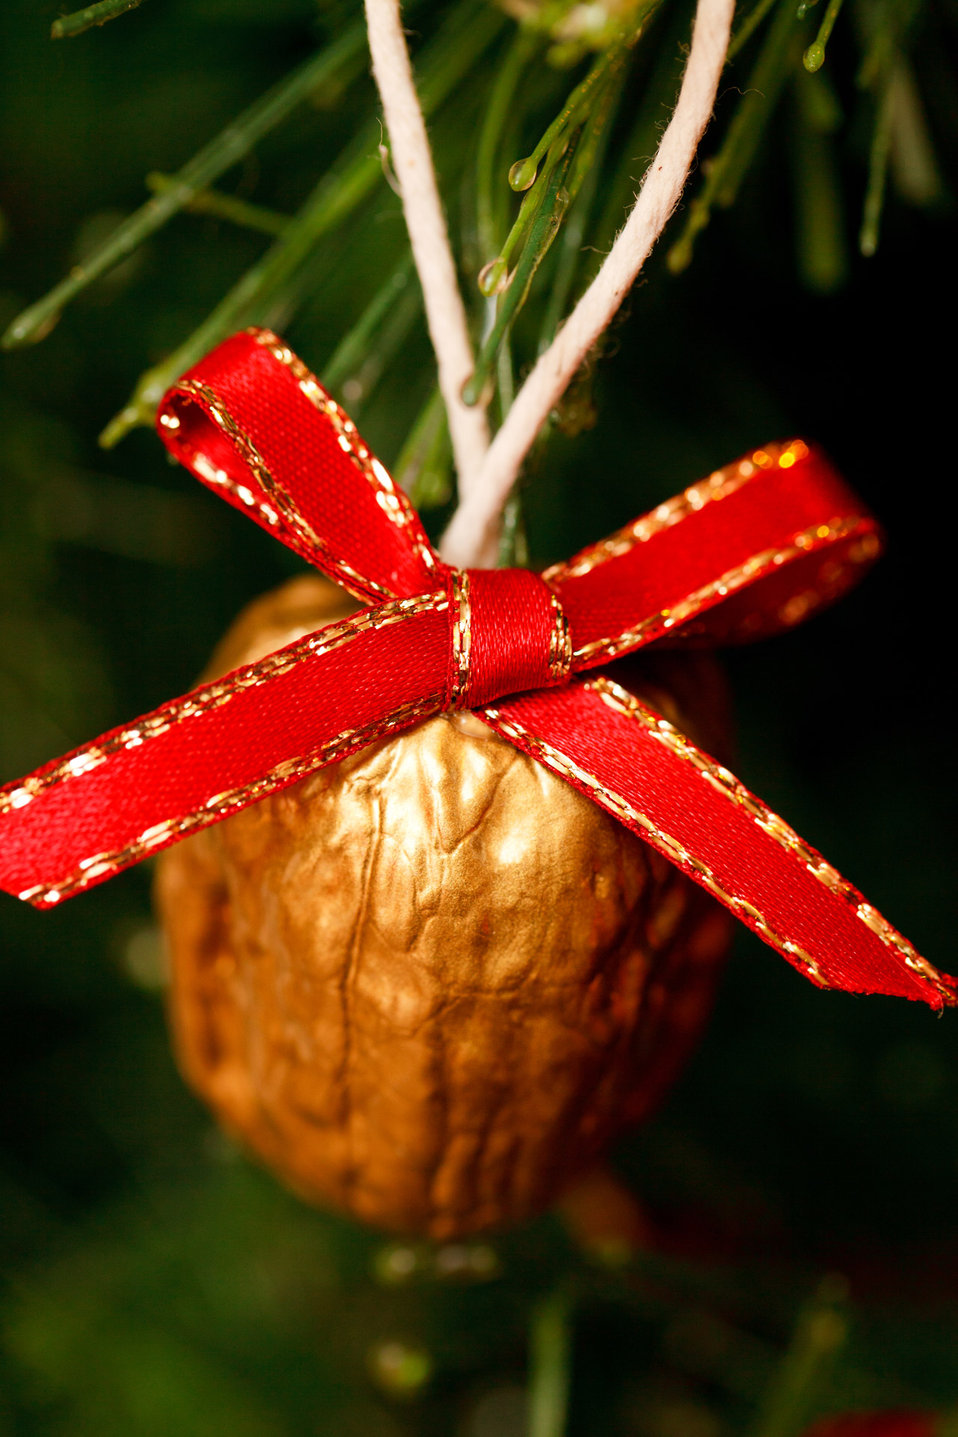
Golden nut decoration

Golden nut christmas decoration on a tree.